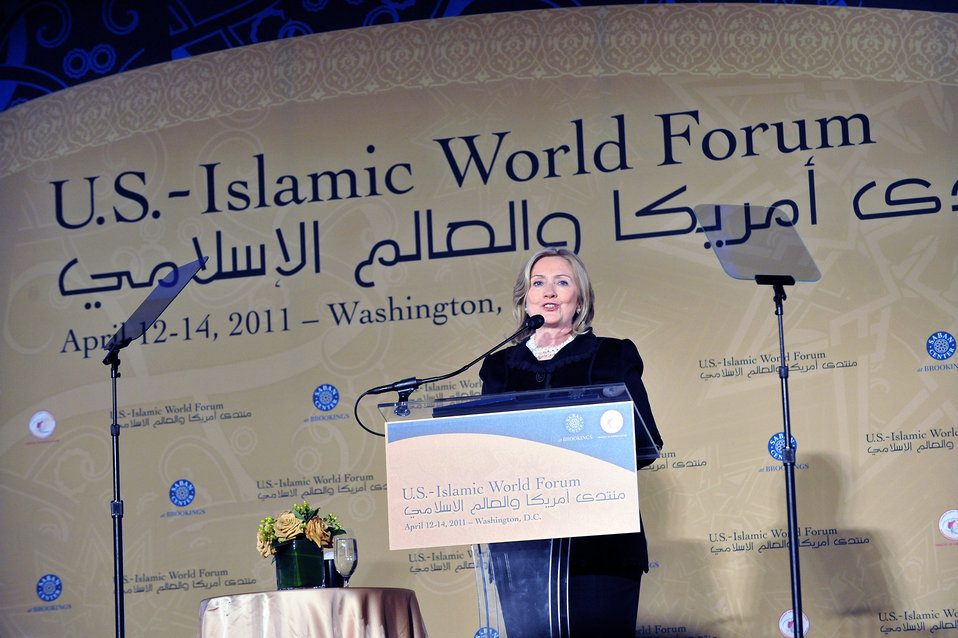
Secretary Clinton Delivers Remarks at U.S.-Islamic World Forum

U.S. Secretary of State Hillary Rodham Clinton delivers remarks at the U.S.-Islamic World Forum in Washington, D.C., on April 12, 2011.